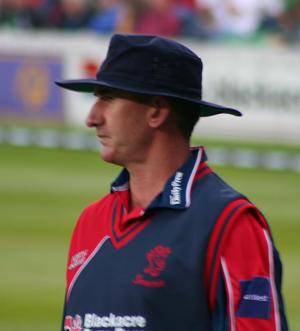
Andrew Caddick at Taunton